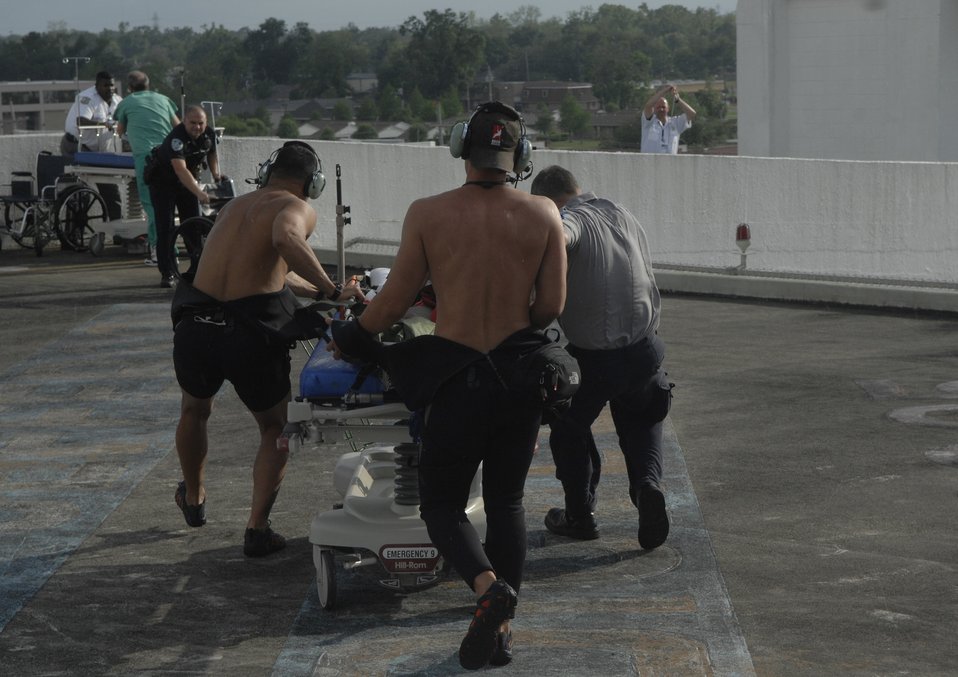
Moody Airmen rescue Cuban migrants found at sea

Pararescuemen from the 38th Rescue Squadron out of Moody Air Force Base, Ga., transport a patient on a stretcher at a medical facility in New Orleans during a real world rescue mission April 25. Moody rescue assets responded to a request for support to retrieve stranded Cuban migrants who had been picked up by a passing tanker ship. Overall, Moody Airmen hoisted five adults and one child from the tanker and transported them safely to the medical facility.